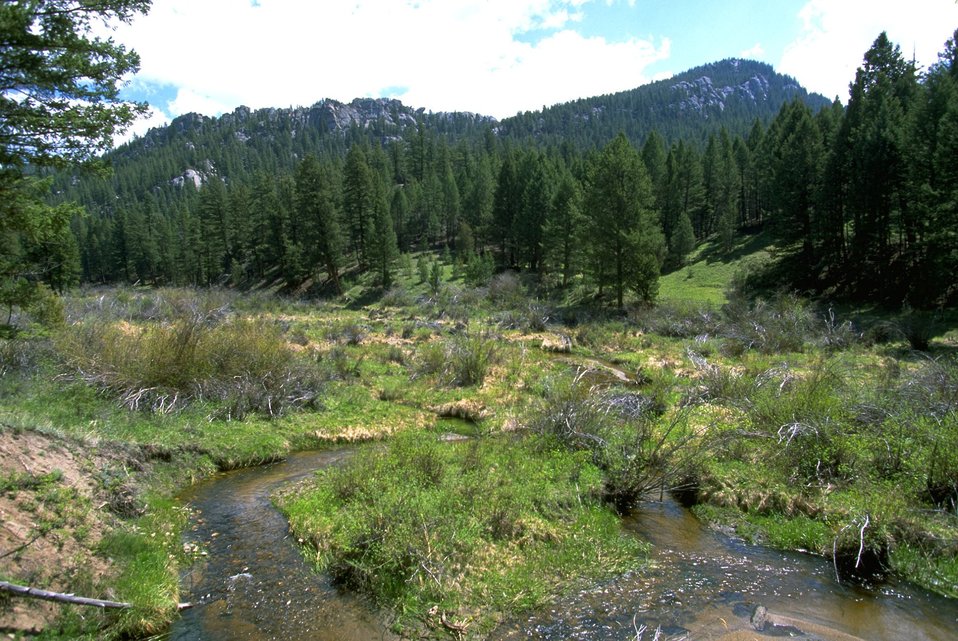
Moose Creek wandering through the grasslands in Humbug Spires WSA